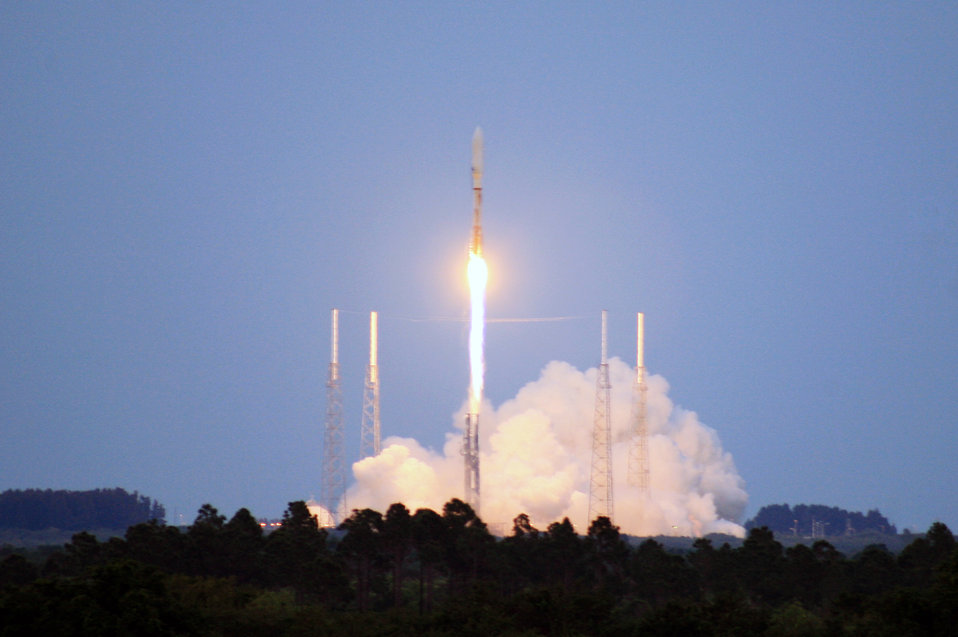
High flight...

The X-37B Orbital Test Vehicle makes its first space flight aboard an Atlas V rocket April 22, 2010, from Complex 41 at Cape Canaveral Air Force Station, Fla.